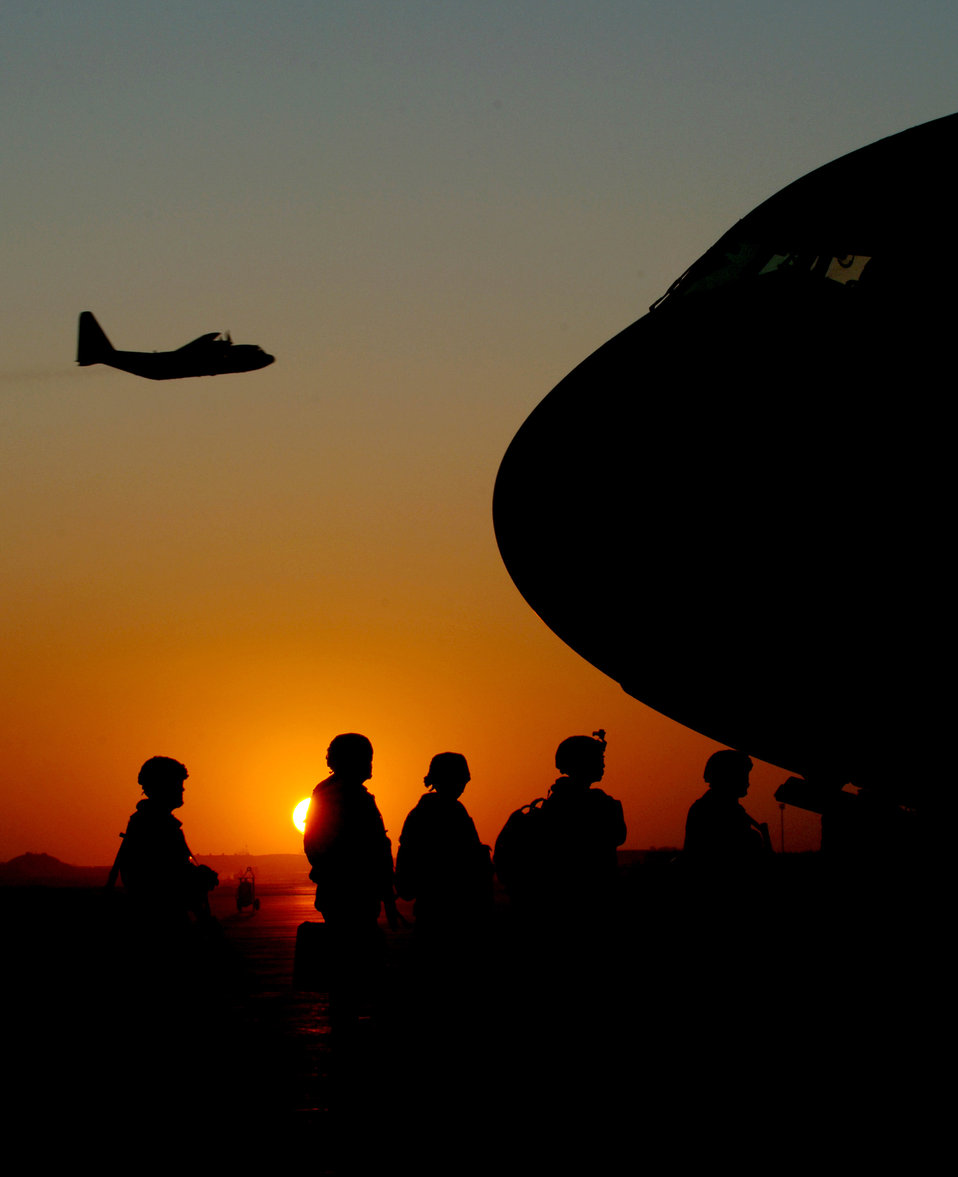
Leaving on a jet plane

A C-130 Hercules takes off as Soldiers board a C-17 Globemaster III Nov. 17 at Joint Base Balad, Iraq. The C-130 is deployed to the 777th Expeditionary Airlift Squadron here from Little Rock Air Force Base, Ark. The C-17 is deployed from the 437th Airlift Wing at Charleston AFB, S.C.